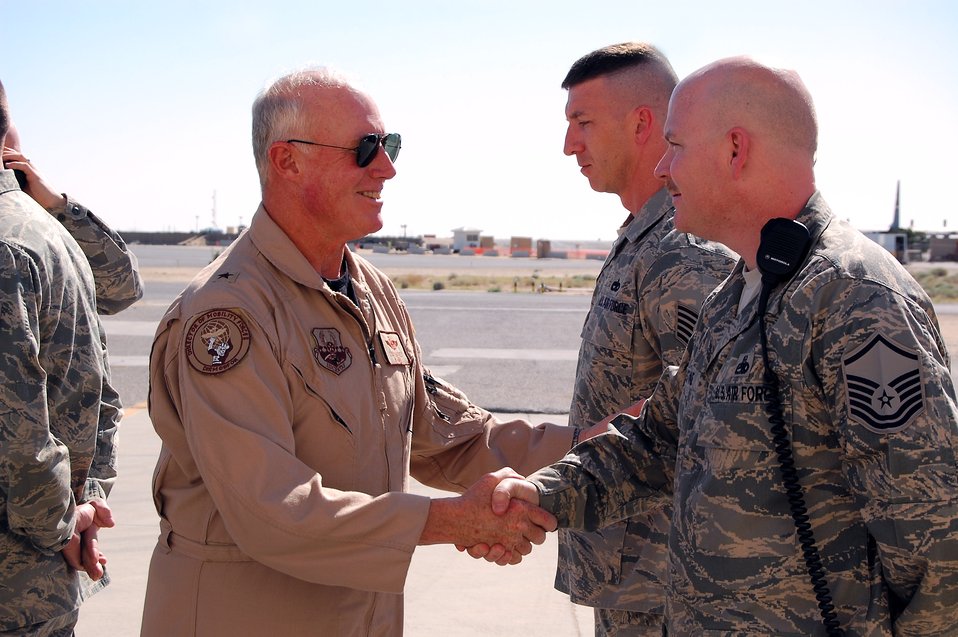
Air Forces Central general visits deployed Airmen

Brig. Gen. Thomas Haynes shakes hands with Master Sgt. Henry Augustine while Tech. Sgt. Michael Edie stands in the background during the general's March 8 visit to a Southwest Asia air base. General Haynes, the U.S. Air Forces Central director of mobility forces, visited the 386th Air Expeditionary Wing to see firsthand how Airmen support the deployed airlift mission. Sergeant Augustine is deployed from MacDill Air Force Base, Fla., and Sergeant Edie is deployed from Yokota Air Base, Japan.